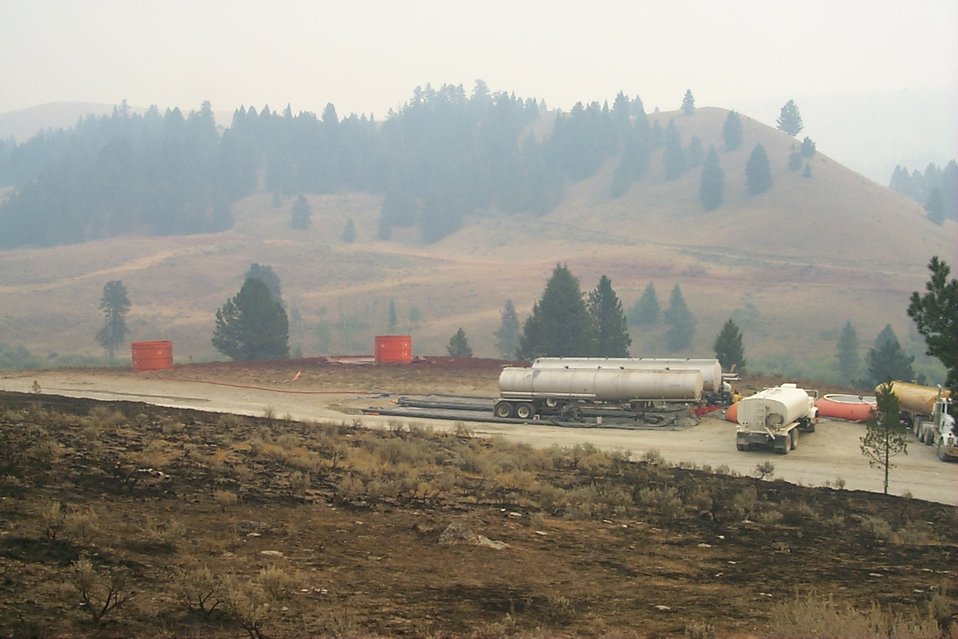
Field water storage Fire Clearwater Fire Salmon Field Office USRD Upper Snake River District